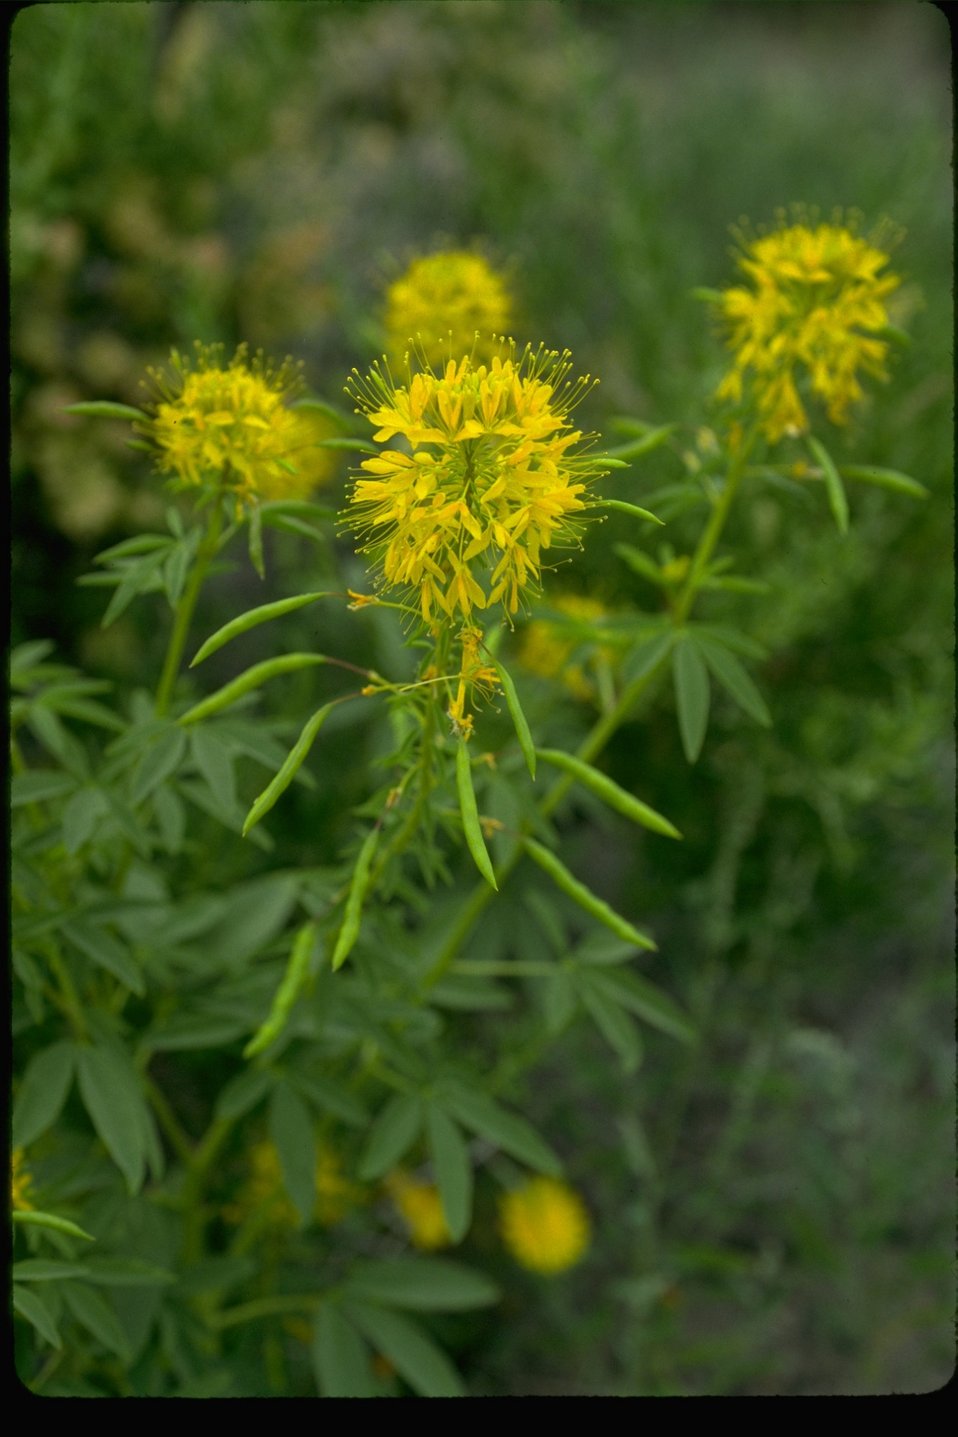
Bee plant (Cleome lutea) in the Mikey Basin Area of the Alvord Desert in Southeastern Oregon.